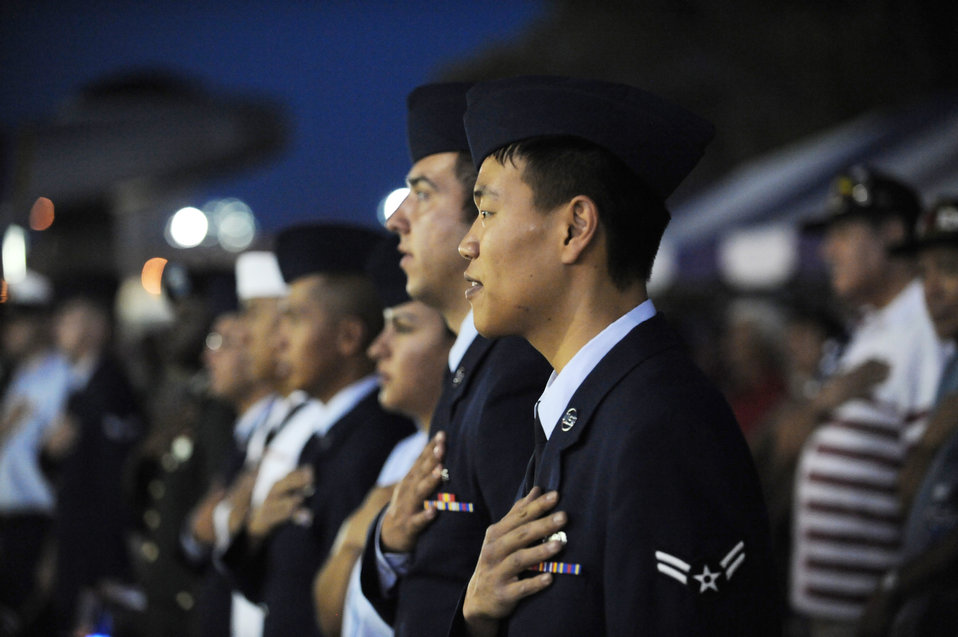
Nellis welcomes newest citizens during Freedom Fest

Eleven servicemembers pay respect during the Pledge of Allegiance at the naturalization ceremony July 4 during the Freedom Fest celebration in Nellis Air Force Base, Nev. The applicants included members of the Air Force, Army, Navy Reserve and Coast Guard. Members hailed from Armenia, Cameroon, Colombia, Mexico, the Philippines and South Korea.